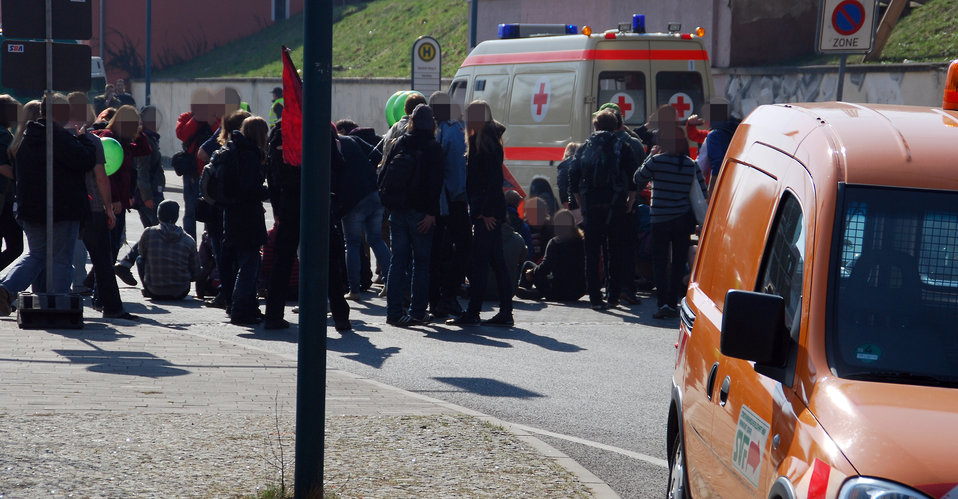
Proteste gegen den Nazi-Aufmarsch am 24.3.2012 in Frankfurt (Oder)